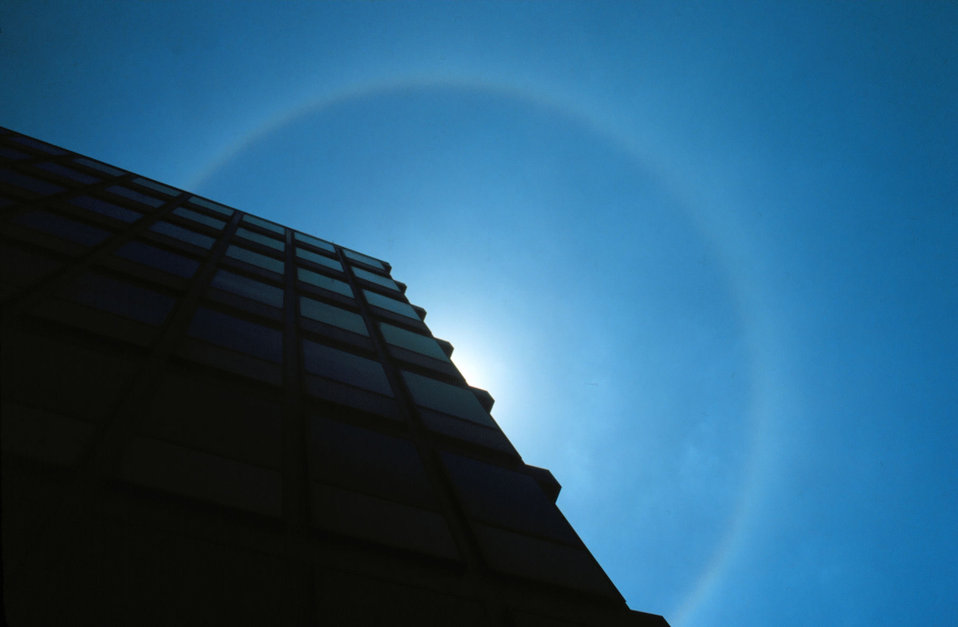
Halo